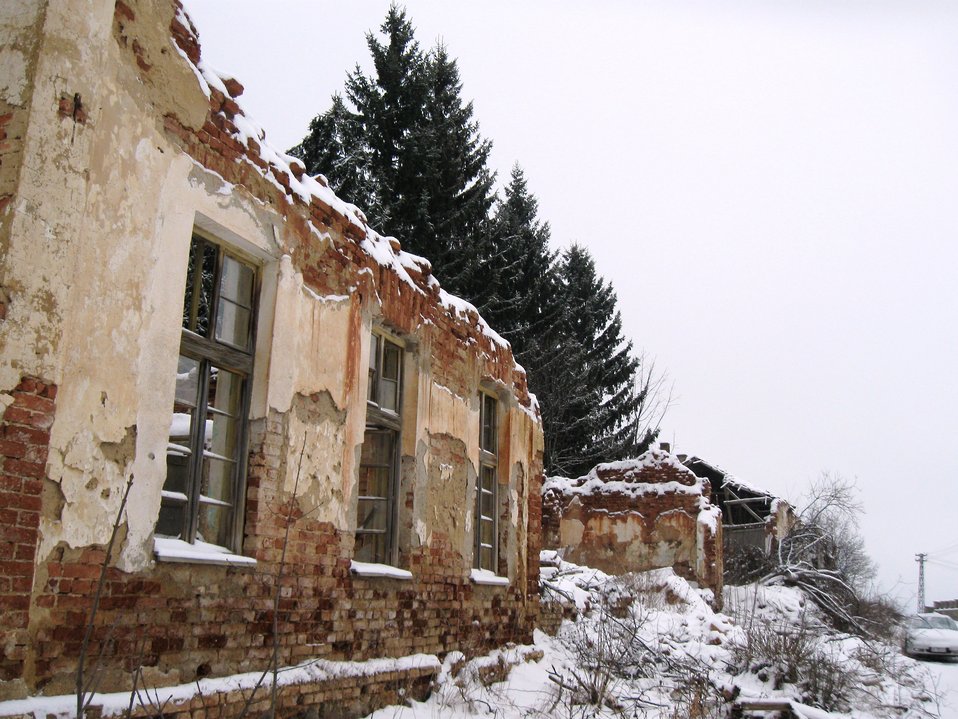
Српски / srpski: , аутор: Радосав Стојановић